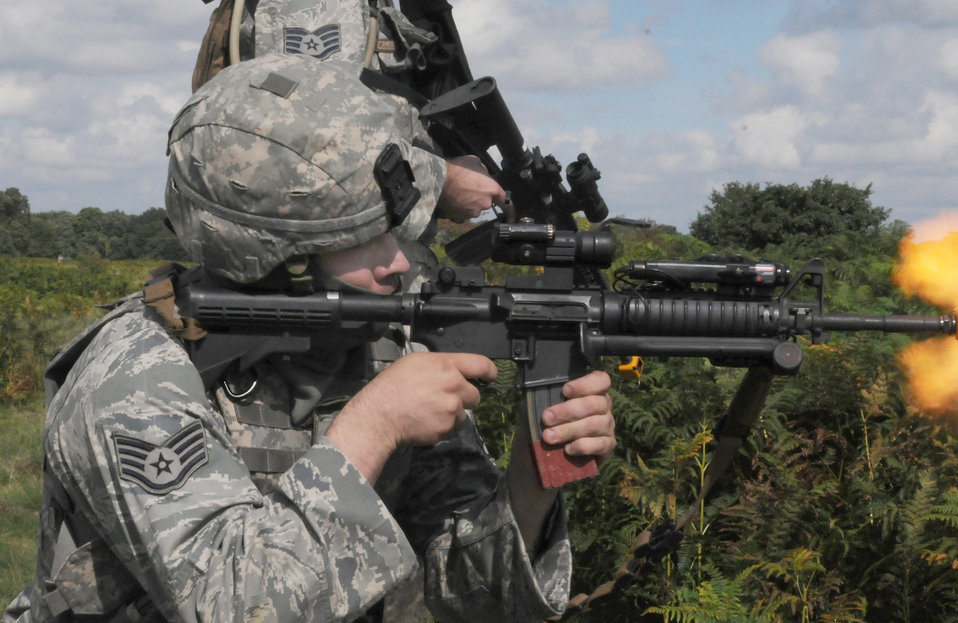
Security forces Airmen help prep RAF Regiment for Afghanistan tour

Staff Sgt. Jon Anderson provides cover fire while conducting a danger crossing training scenario Sept. 7, 2010, at Stanford Training Area, England. When not supporting the Royal Air Force Regiment in the field, more than 20 100th SFS Airmen held their own scenarios while they had access to the 30,000-acre training area. These Airmen were here to embed with British servicemembers who are about to deploy to Afghanistan to serve with U.S. Marines. This gave the regiment troops an idea of what it is like to work with U.S. forces. Sergeant Anderson is assigned to the 100th Security Forces Squadron at Royal Air Force Mildenhall, England.